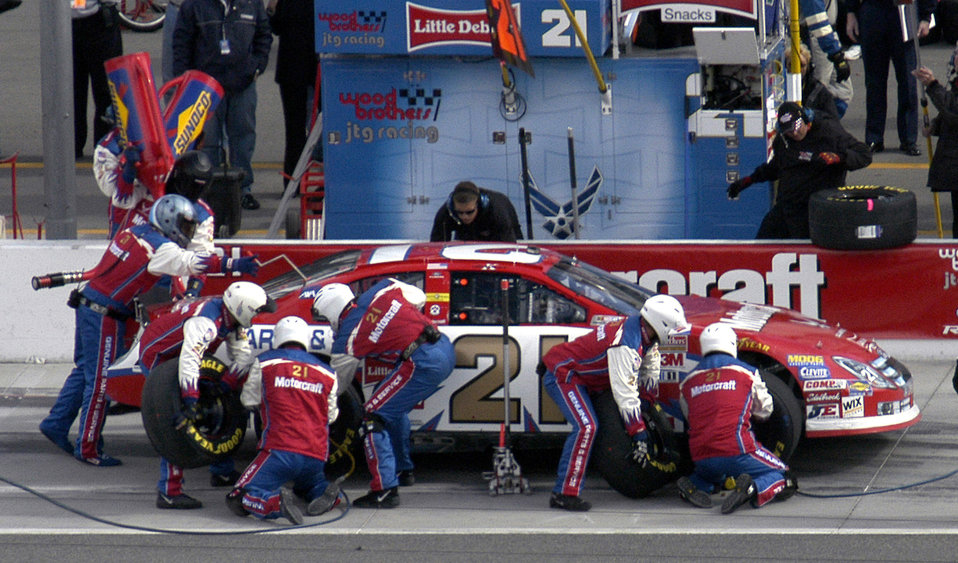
NASCAR flies

The U.S. Air Force #21 Motorcraft race car driven by Ken Schrader stops for a pit stop to get four new tires and a tank of gas during the UAW Daimler Chrysler 400 race at Las Vegas, Nev., Sunday, March 12, 2006. The car ended the day with engine problems on lap 187, and finished in 41st place.